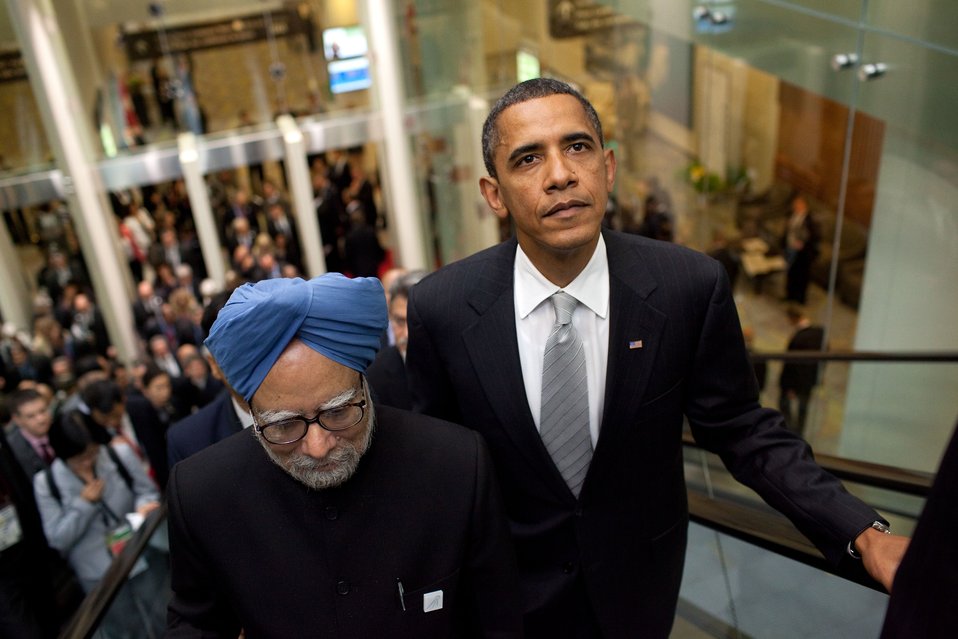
President Barack Obama and Indian Prime Minister Manmohan Singh ride an escalator on the way to their bilateral meeting during the G20 Summit in Toronto, Canada, Sunday, June 27, 2010.